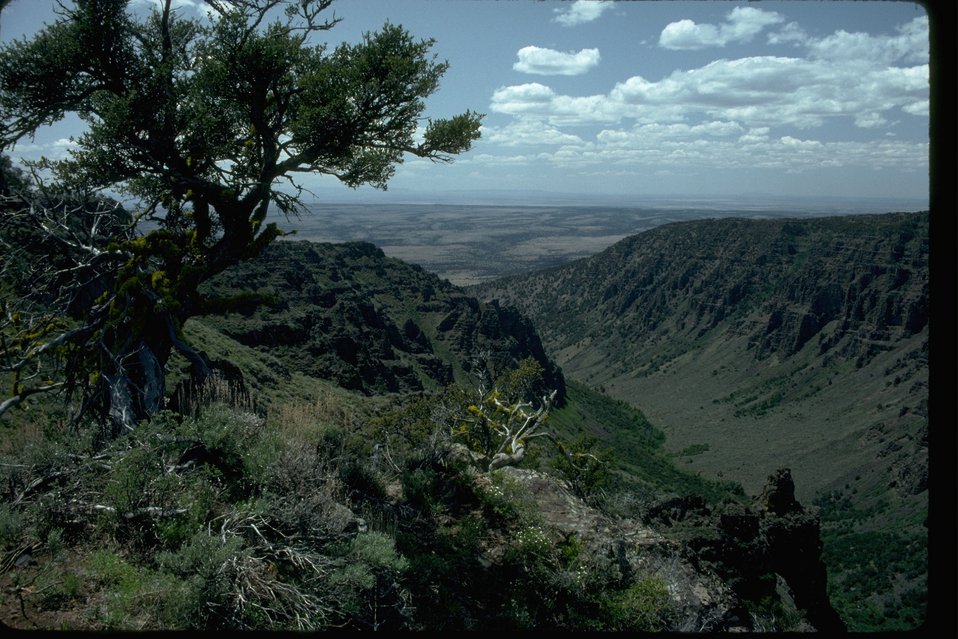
View of Little Blitzen Gorge on Steens Mountain from "Rooster Comb" area. View to the West.